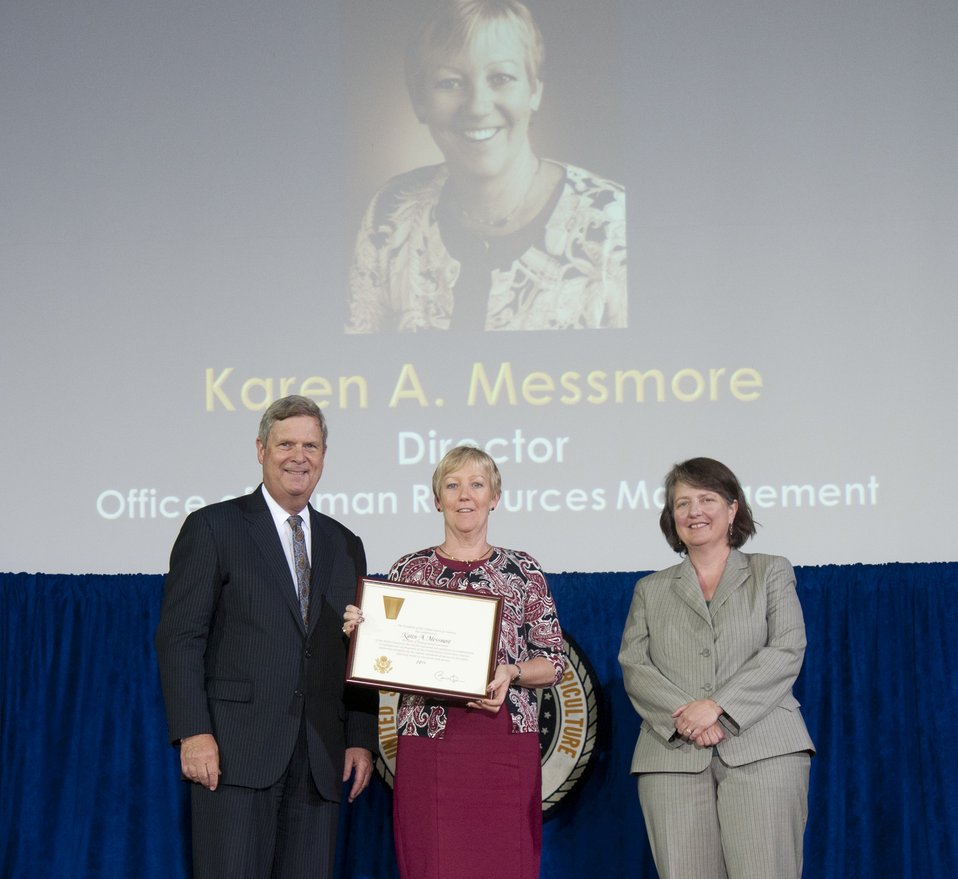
Agriculture Secretary Tom Vilsack and Agriculture Deputy Secretary Kathleen Merrigan present the Presidential Rank Award to Office of Human Resources Management (OHRM) Director Karen A Messmore at the U.S. Department of Agriculture (USDA) 64th Annual Honor Awards Ceremony in Washington, D.C. on Wednesday, Sept. 12, 2012. Presidential Rank Award Winners in the Senior Executive Service receive this award for sustained extraordinary accomplishment in management of programs of the U.S. Government and for leadership exemplifying the highest standards of service to the public, reflecting credit on the career civil service.